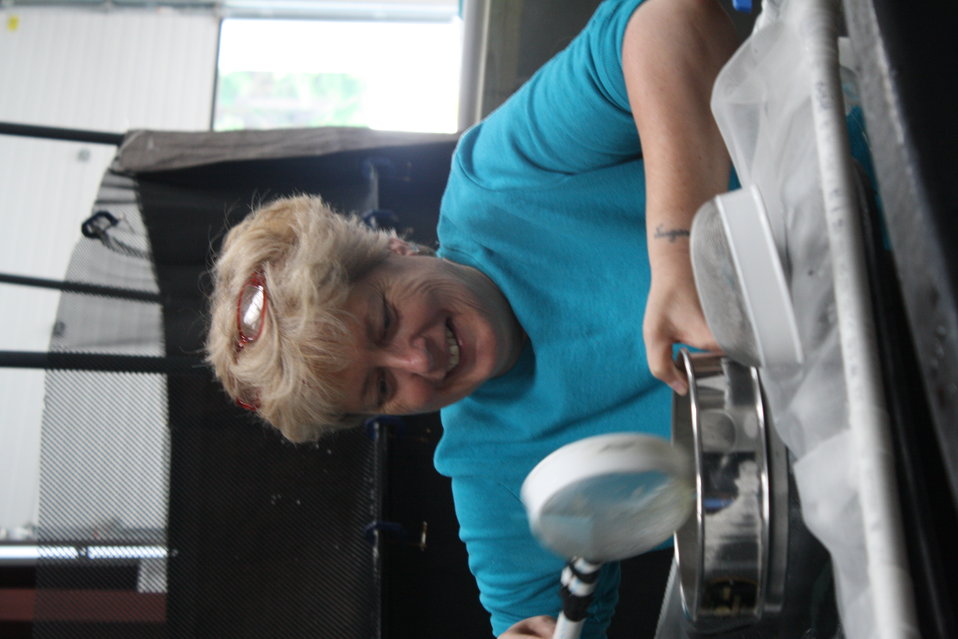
Nashua National Fish Hatchery welcomes regional office employees

Sifting shad eggs.